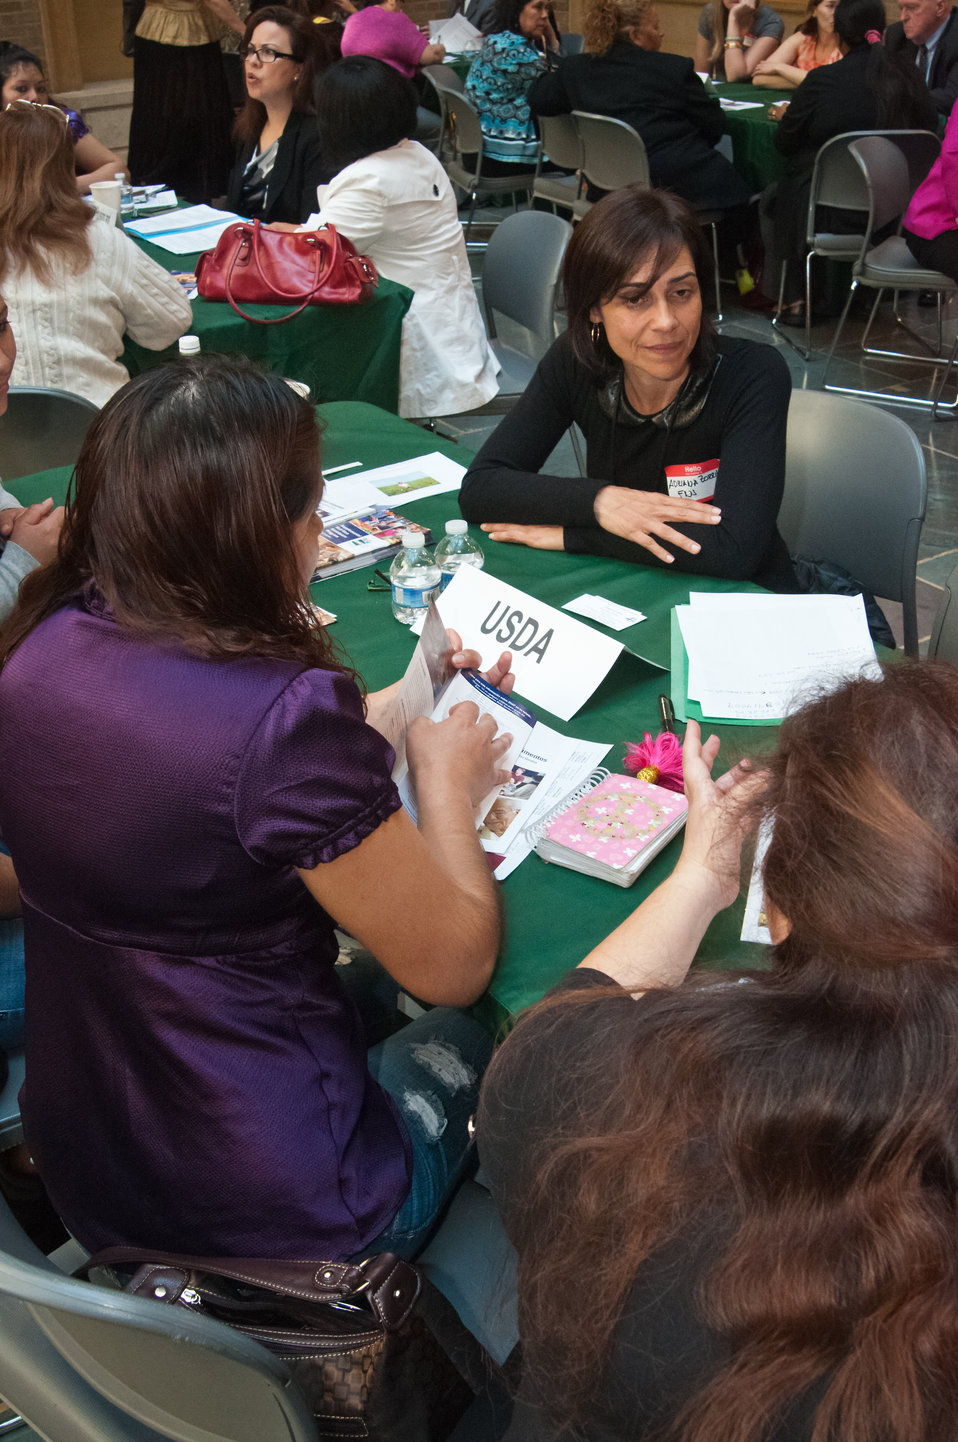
Adriana Zorrilla, Food and Nutrition Service (FNS), assists members of Alianza Nacional de Campesinas, an organization of Hispanic Farmworker women at the United States Department of Agriculture (USDA), Office of Advocacy and Outreach Breakfast Networking Reception in Washington, DC, Tuesday, April 9, 2013. The reception allowed the women to network and discuss their issues, priorities and opportunities in rural communities throughout the United States. The women were able to speak to representatives from nine Federal agencies with migrant programs: White House, USDA, Department of Health and Human Services (HHS), Housing and Urban Development (HUD), Department of Labor (DOL), Equal Employment Opportunity Commission (EEOC), Department of Education (DOE), Environmental Protection Agency (EPA) and United States Citizenship and Immigration Services (UCIS).